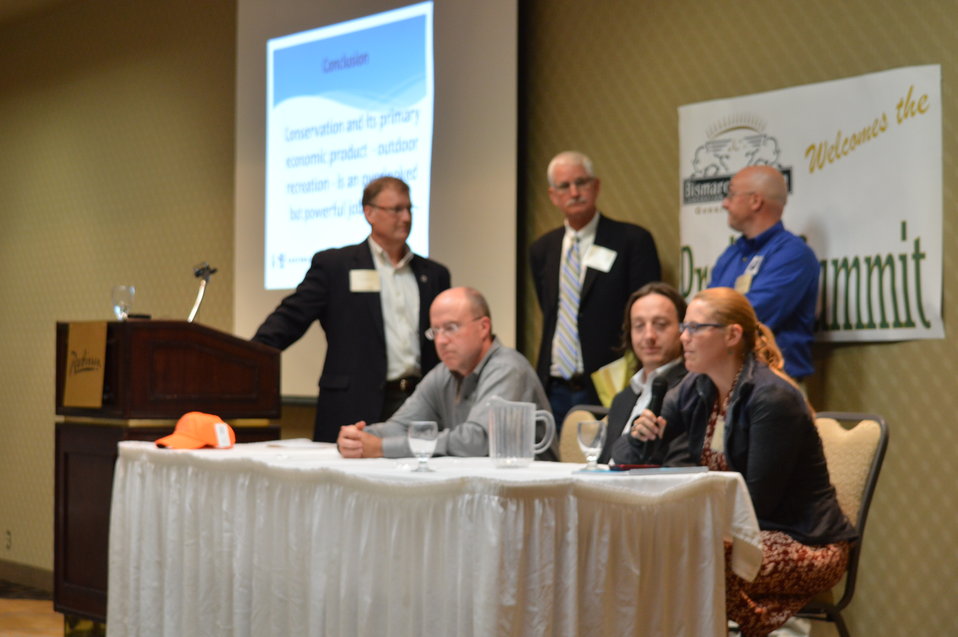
Discussion Panel

Through the efforts of Ducks Unlimited and its partners, a Prairie Summit meeting was held in June 2013 in Bismarck, North Dakota, bringing key stakeholders to the table to identify and begin to address the immediate needs of the overall effort to conserve wetlands and grasslands, as well as bring media attention to the issues at hand and the urgency of the situation.